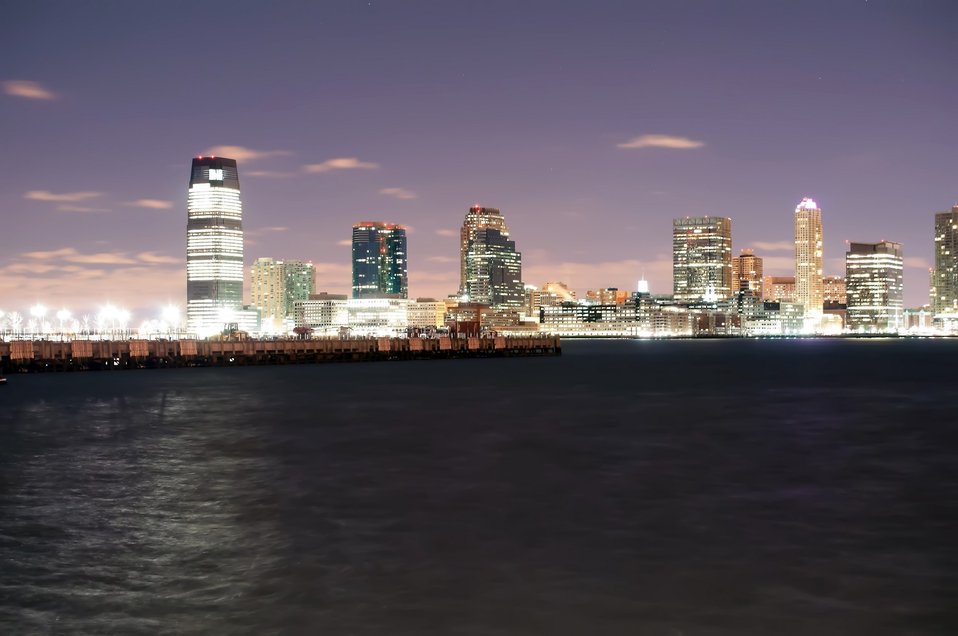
Newark new jersey skyline.